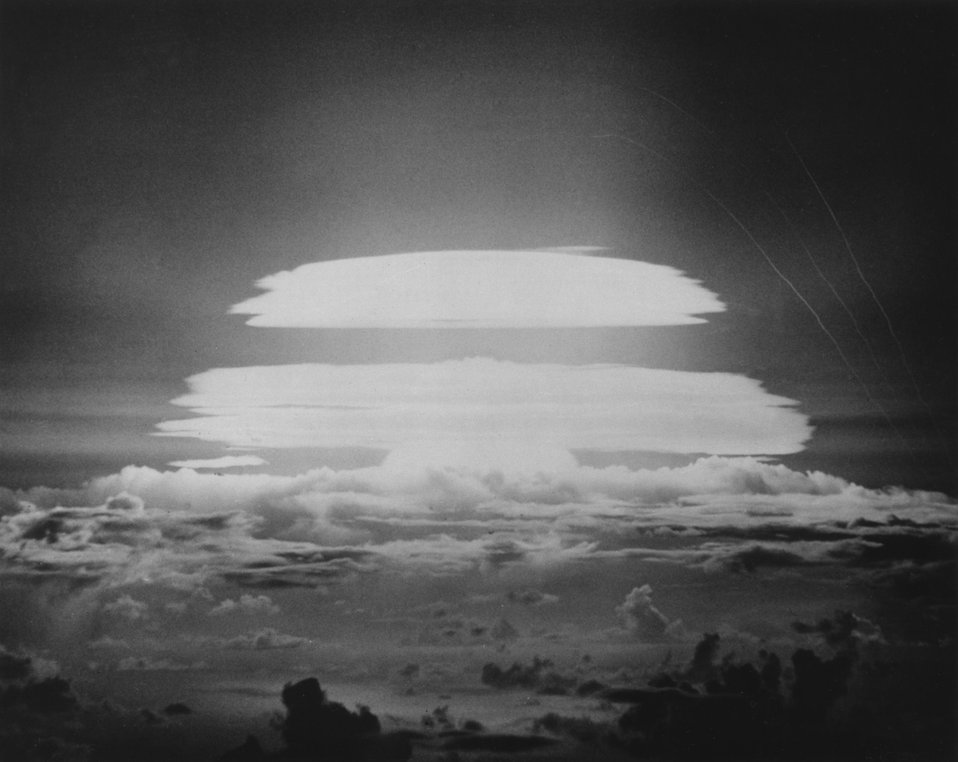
Fireball of the May 21, 1956 test detonation over Bikini Atoll.